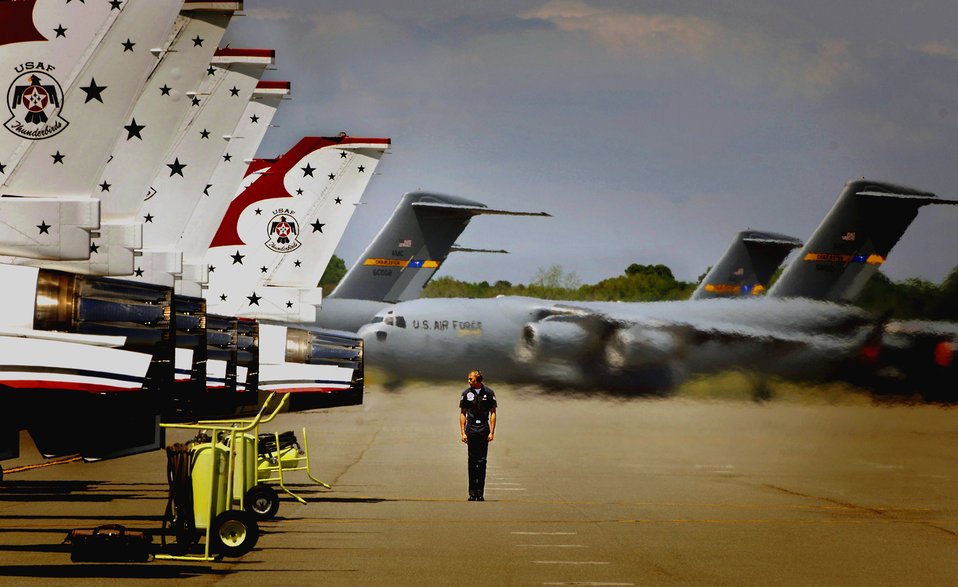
The heat wave goes on

Staff Sgt. Walter Jenkins marshals in Thunderbird Four after arriving on the Charleston Air Force Base, S.C., flightline April 28. The Air Force Thunderbirds will perform at the 2008